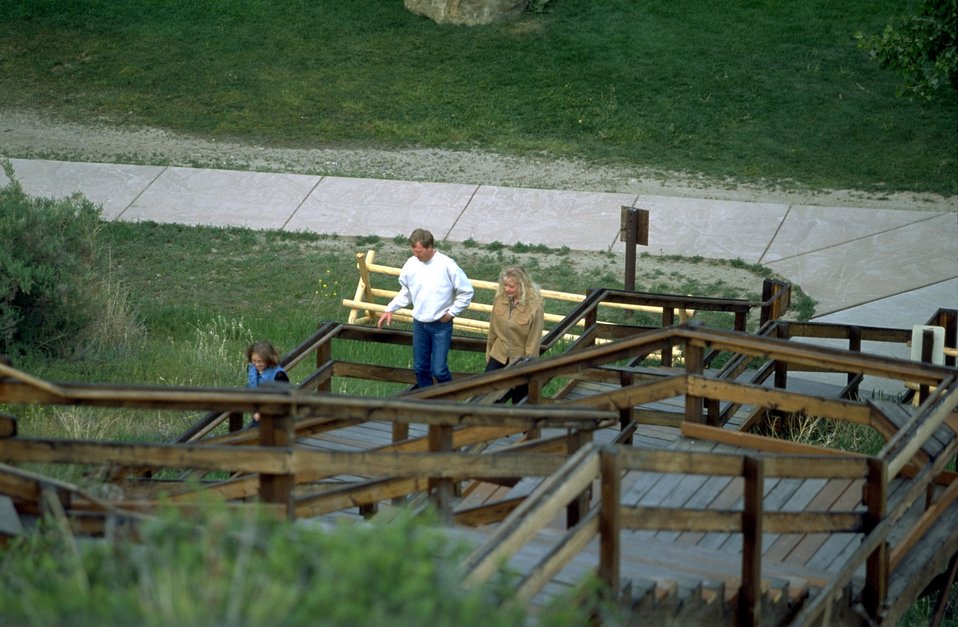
Visitors climbing the stairs of the boardwalk to view the signature of Captain William Clark at Pompeys Pillar